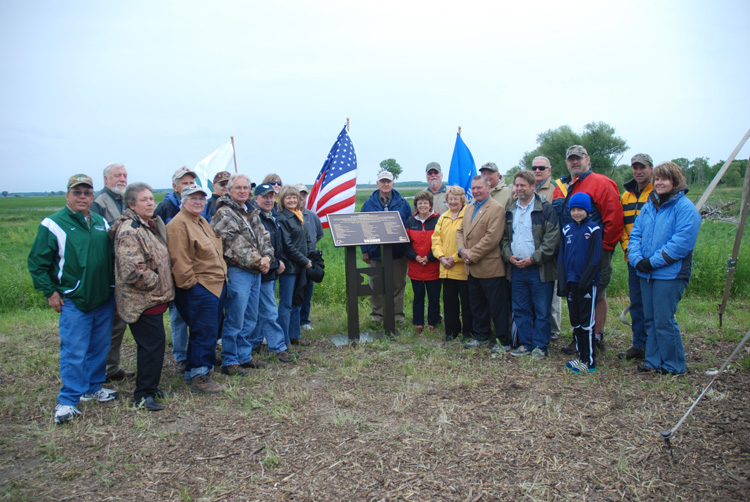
partners2